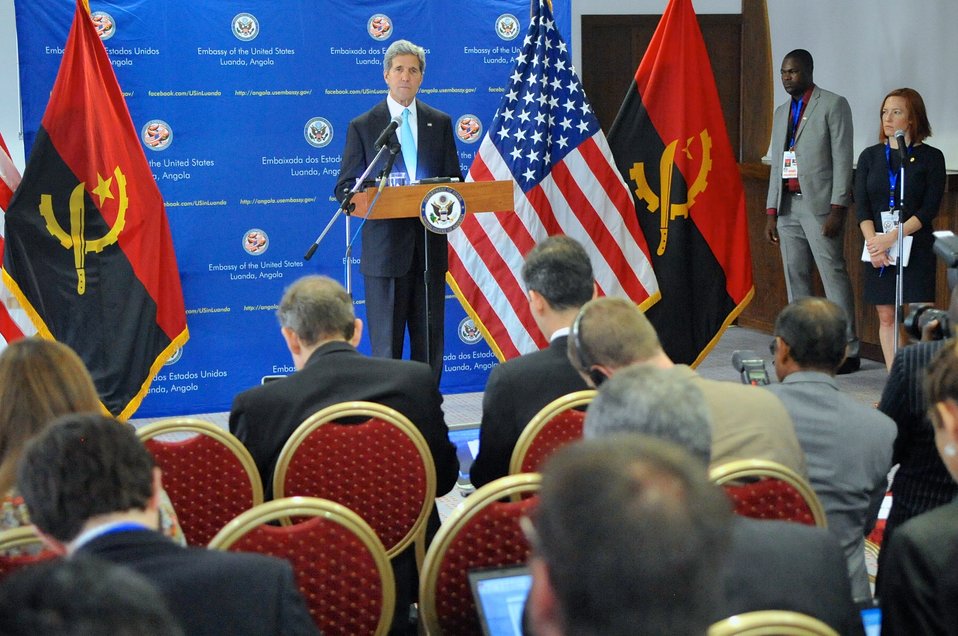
Secretary Kerry Holds News Conference After Meetings With Angolan Leaders

U.S. Secretary of State John Kerry addresses reporters after his bilateral meetings with Angolan President Jose Eduardo dos Santos and Foreign Minister Rebelo Chikoti in Luanda on May 5, 2014.